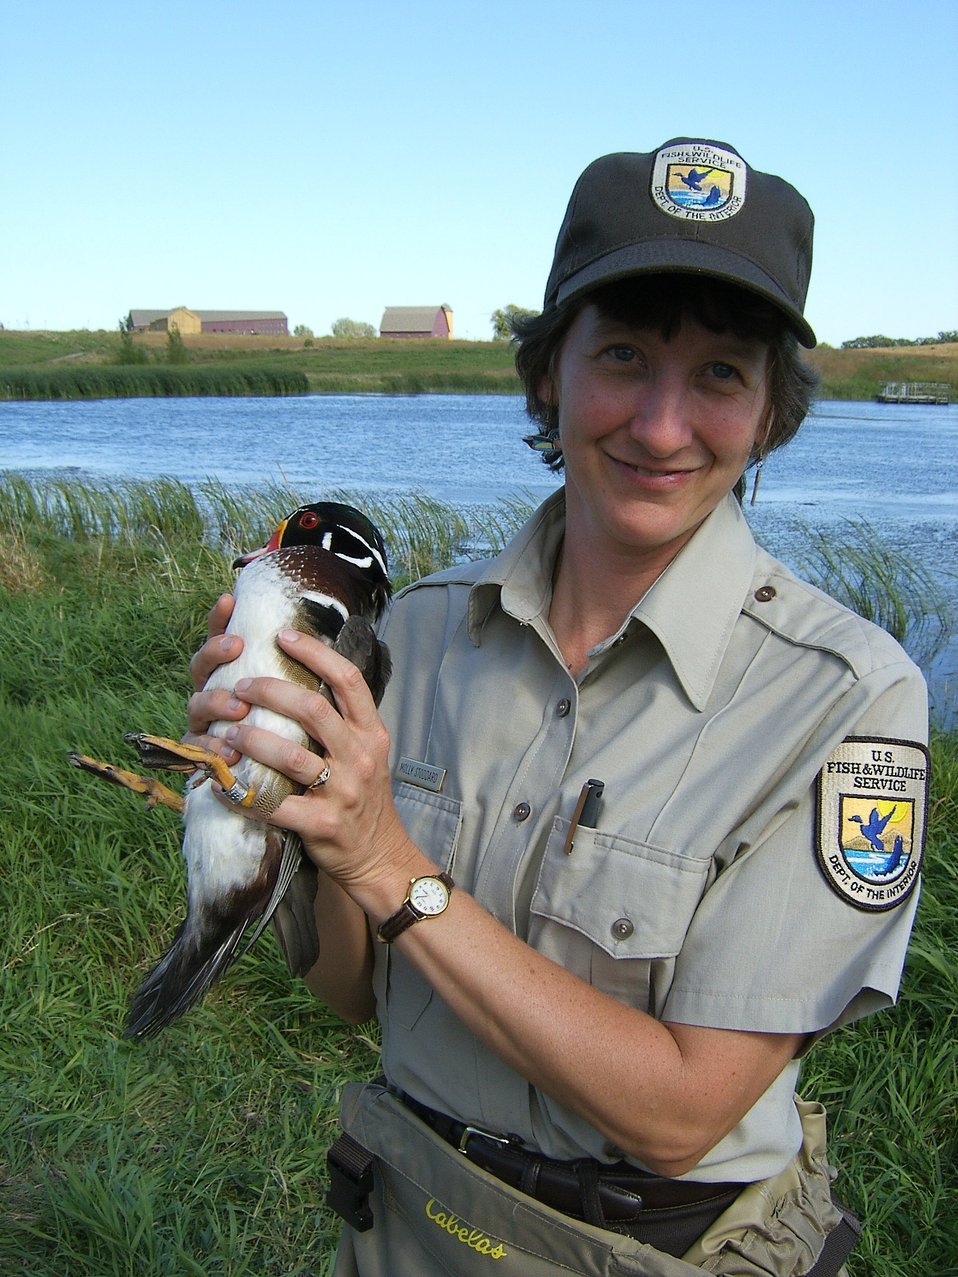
Molly Stoddard, instructional systems specialist at the
Prairie Wetlands Learning Center, a U.S. Fish and Wildlife Service facility in Fergus Falls, Minnesota, takes a break from bird banding. She credits her mom, Ann Nordstrom, for her career path.